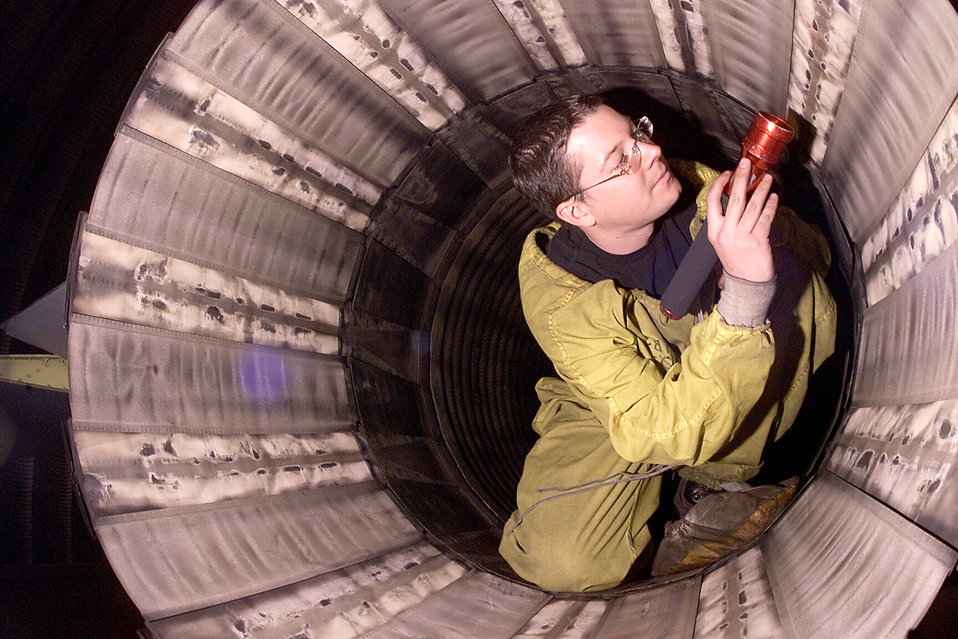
Check 50

OSAN AIR BASE, South Korea -- Staff Sgt. Jacob W. Warren inspects a jet engine exhaust on an F-16 Fighting Falcon aircraft during a 50-hour maintenance service check here March 31. Sergeant Warren is an aerospace propulsion craftsman with the 36th Fighter Squadron.